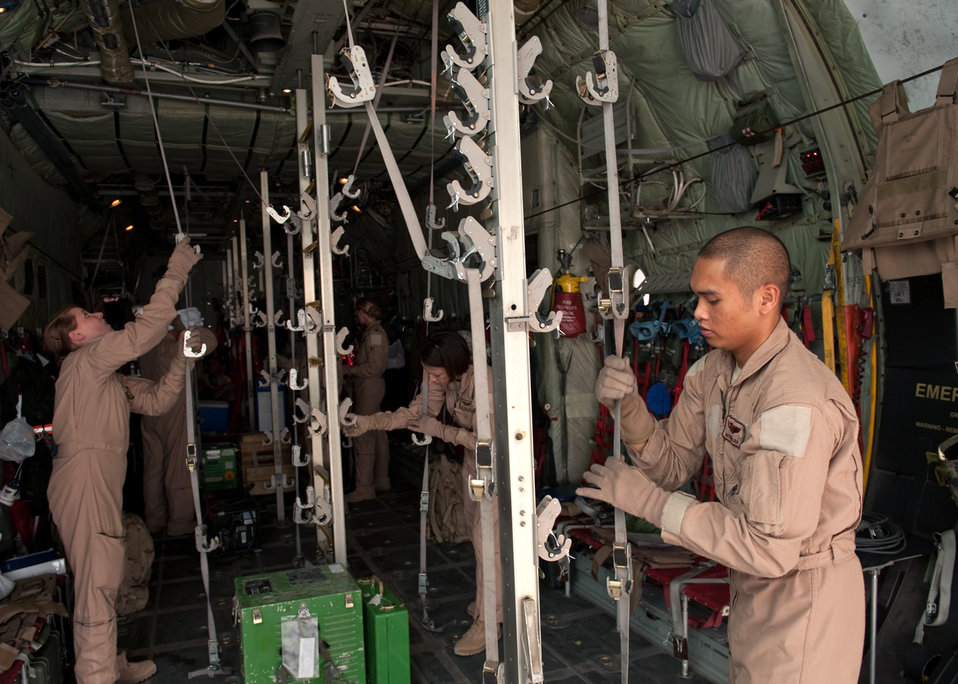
Airmen provide comfort, care with aeromedical evacuations

Staff Sgt. Ryan Balubar along with fellow Airmen from the 379th Expeditionary Aeromedical Evacuation Squadron prepare a C-130 Hercules to transport medical patients Aug. 15, 2009, at an air base in Southwest Asia. Sergeant Balubar is an aeromedical evacuation technician deployed from Kadena Air Base, Japan.